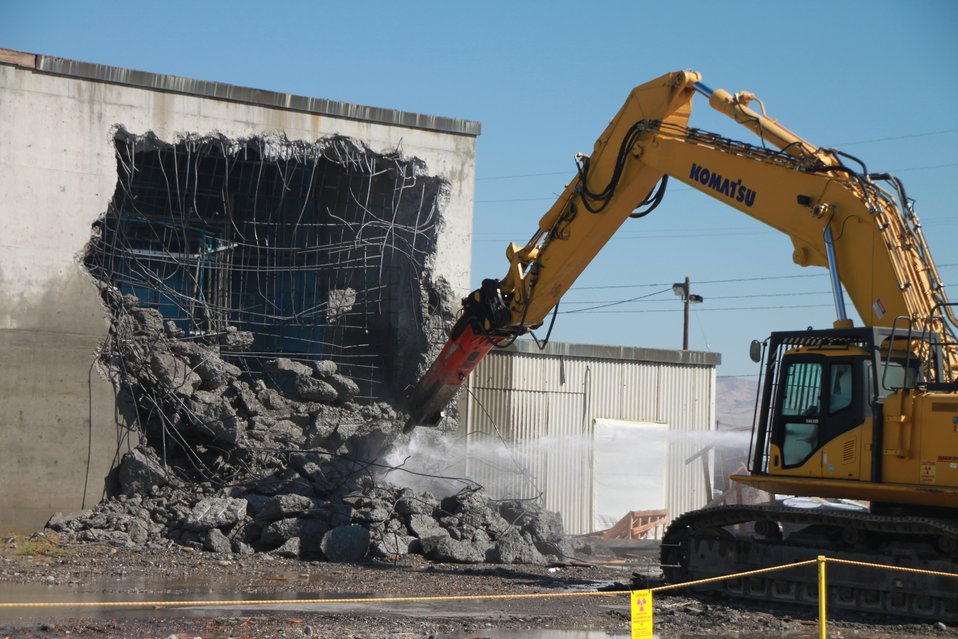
115KE DandD